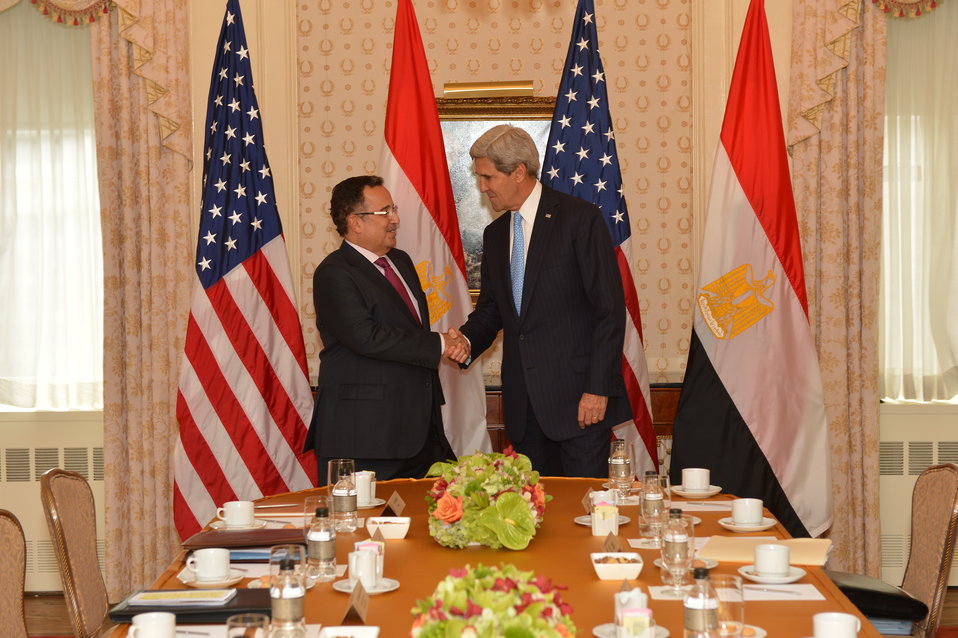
Secretary Kerry Meets With Egyptian Foreign Minister Fahmy

U.S. Secretary of State John Kerry shakes hands with Egyptian Foreign Minister Nabil Fahmy in New York City on September 22, 2013.